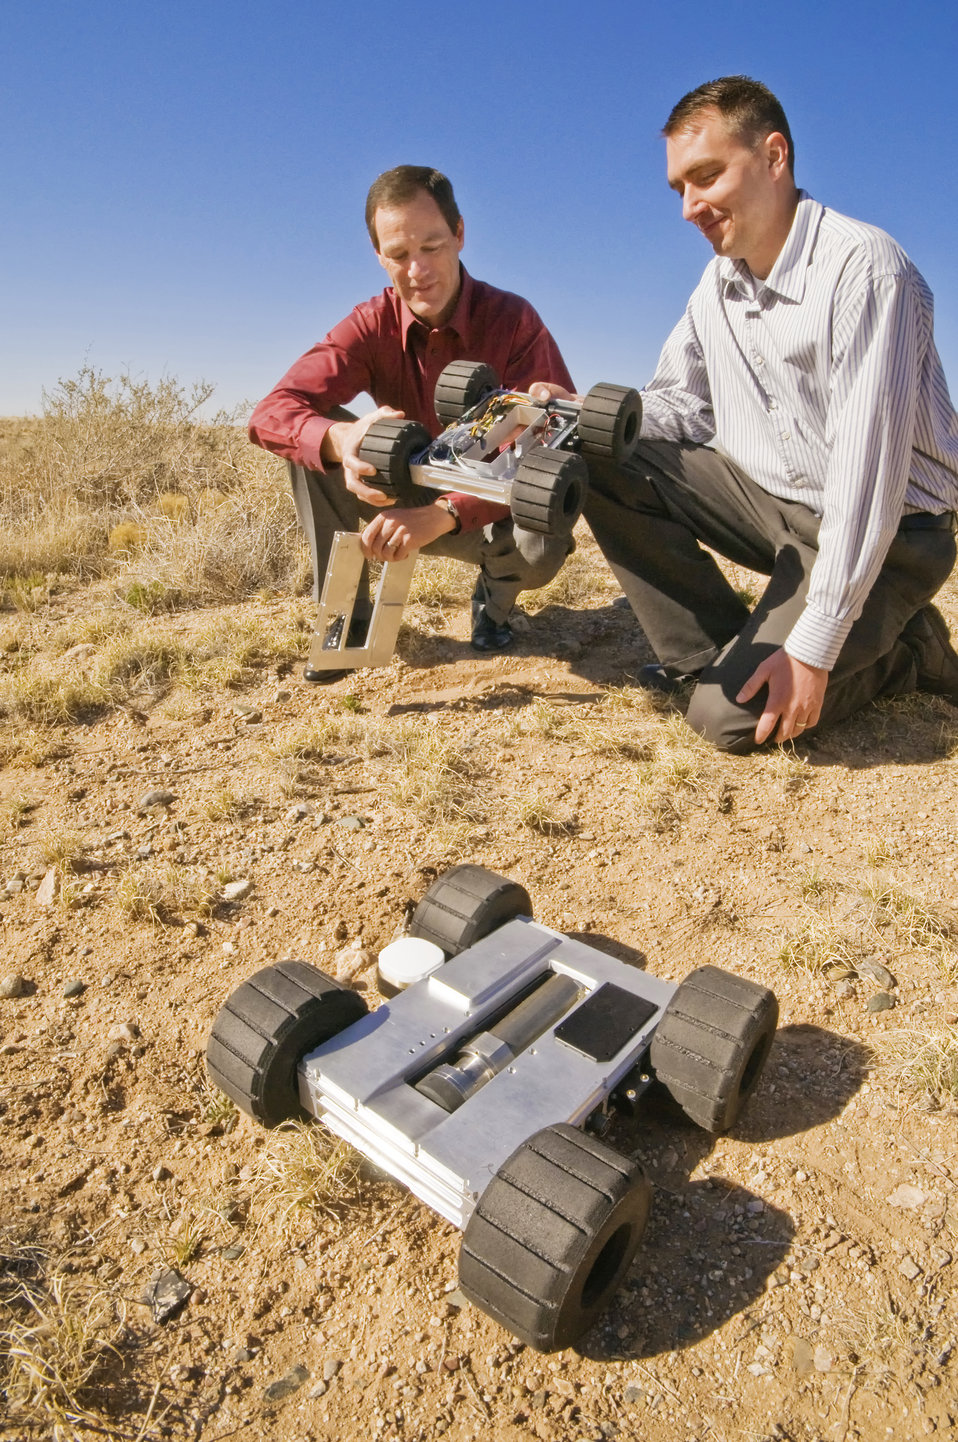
John Salton, left, and Steve Buerger put the Precision Urban Hopper through its paces.

The four-wheeled hopper robots will navigate autonomously by wheel and jump with one mighty let onto or over obstacles of more than 25 feet. The Precision Urban Hopper is funded by the Defense Advanced Research Project Agency. As part of the DARPA project, Sandia developed the shoebox-sized, GPS guide, unmanned ground robots. The overall goal of the robots is to decrease the number of casualties in combat. In addition, to providing military assistance, the hopping capabilities of the robots could be used in law enforcements, homeland security, search and recue applications in challenging terrain and in planetary exploration.